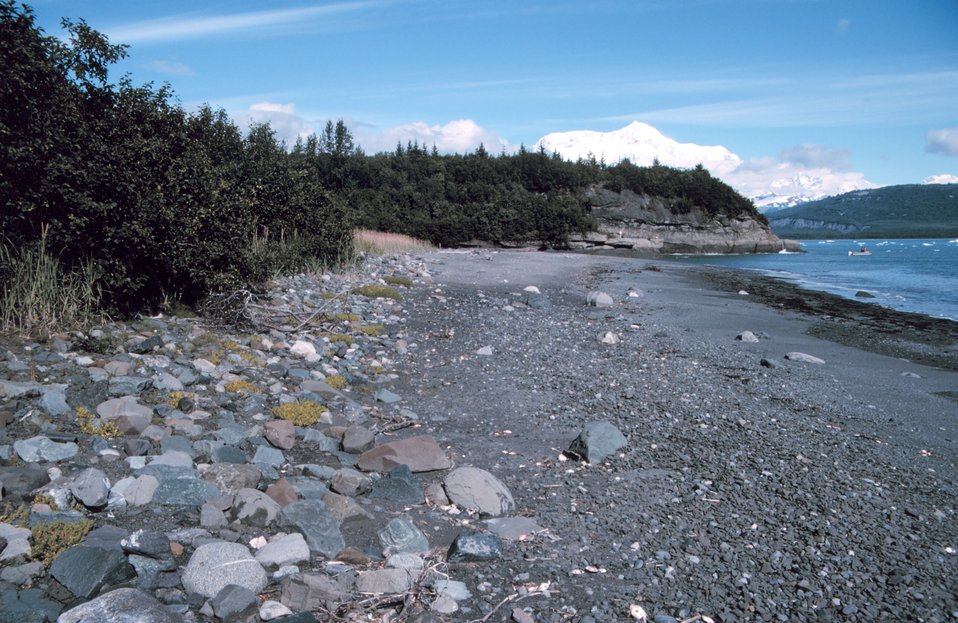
Photo #2 of Mount St. Elias sequence. Mount Saint Elias is one of the largest mountains visible from the sea on the North American continent. It rises to a height of 18,008 feet in a distance of less than 20 miles from sea level at Icy Bay.